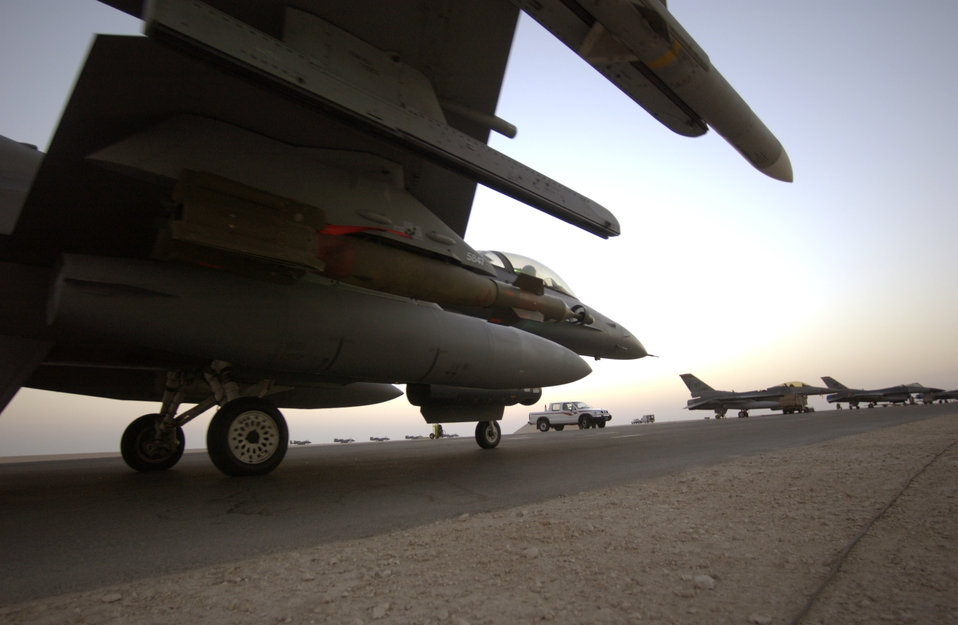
Fire power

SOUTHWEST ASIA -- Lt. Col. Phil Guy prepares to take off in an F-16 Fighting Falcon. The aircraft is loaded with two AIM-9 missiles and CBU-12 bombs with a Litening II targeting pod to get the precision-guided munitions to the intended target. Guy is assigned to the 149th Fighter Squadron at Richmond, Va.